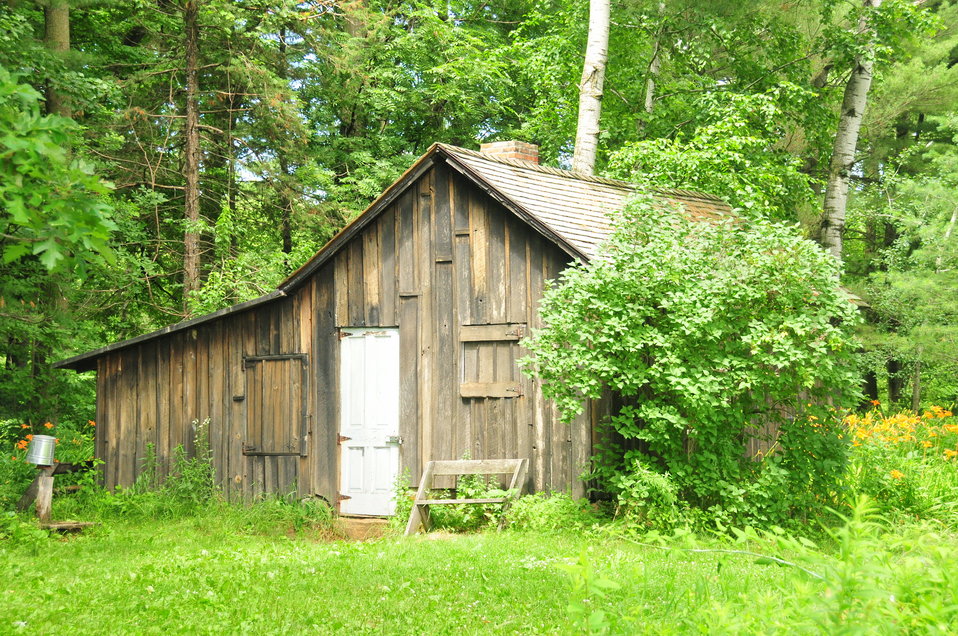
Aldo Leopold's shack that he wrote so fondly of. It still exists today near Baraboo, Wisconsin and may be visited through the Aldo Leopold Foundation
www.aldoleopold.org/home.shtml Visiting this site at least once in your life should be on everyone's 'bucket list'.